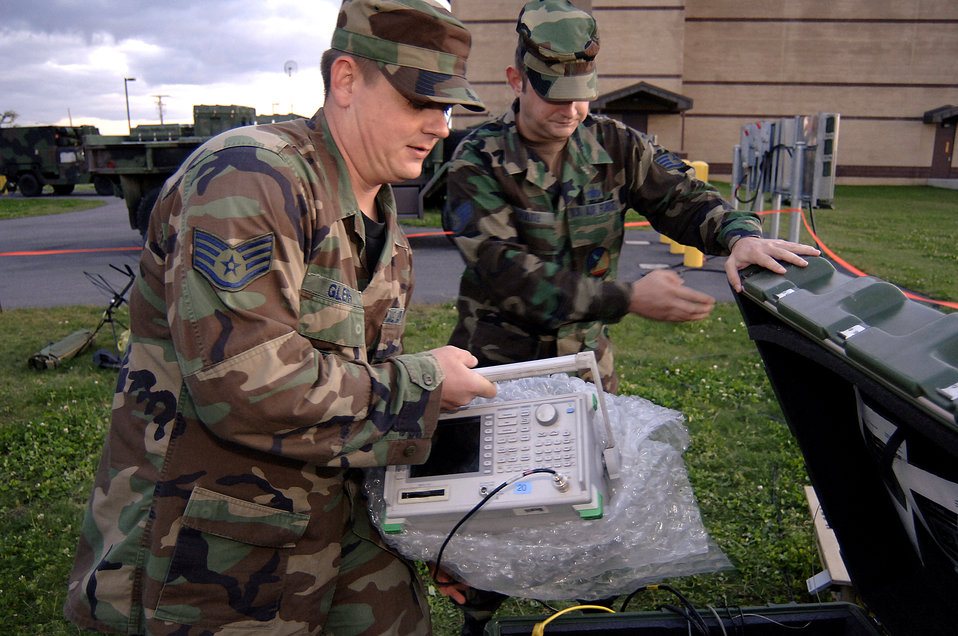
Airmen prepare Army's 10th Mountain Division

FORT DRUM, N.Y. (AFPN) -- Staff Sgt. Brandon Glenn (left) and Staff Sgt. Kevin Waite unpack communications gear during Exercise Unified Endeavor 06 here. The two sergeants, members of the 712th Air Support Operations Center, ensured communications links were in place to train Army staff on close-air-support operations Oct. 20. Sergeant Glenn is a satellite communications craftsman, and Sergeant Waite is a computer control systems craftsman.